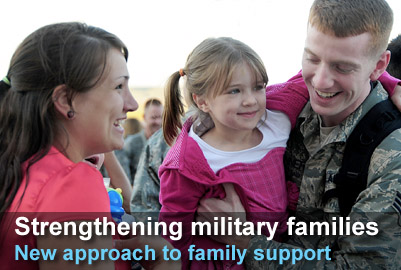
Strengthening military families